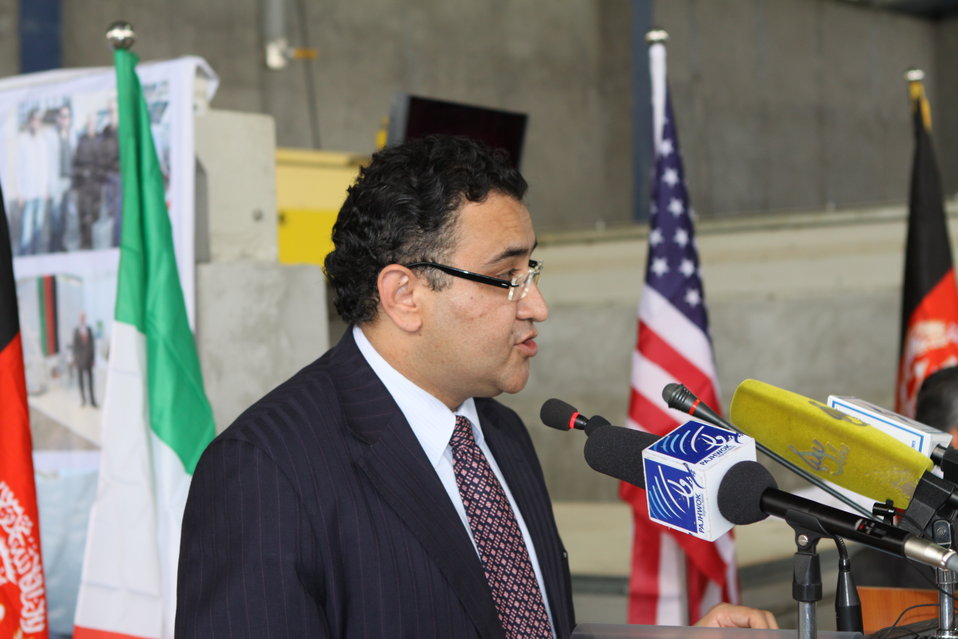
100525 Hirat Marble Conference 167